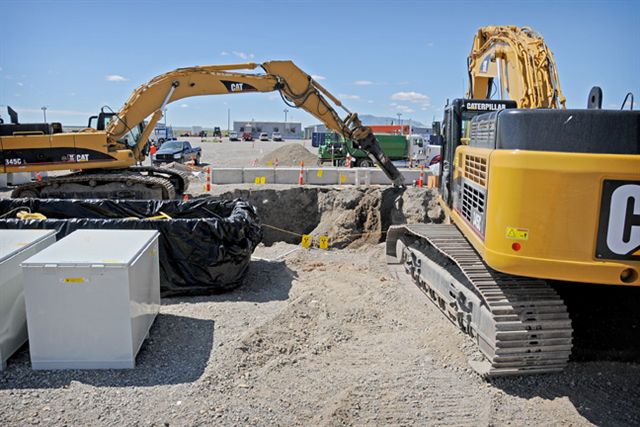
RAN DD RTC S77 TRA-613 EXCAVATION 070610 P6555-003 A